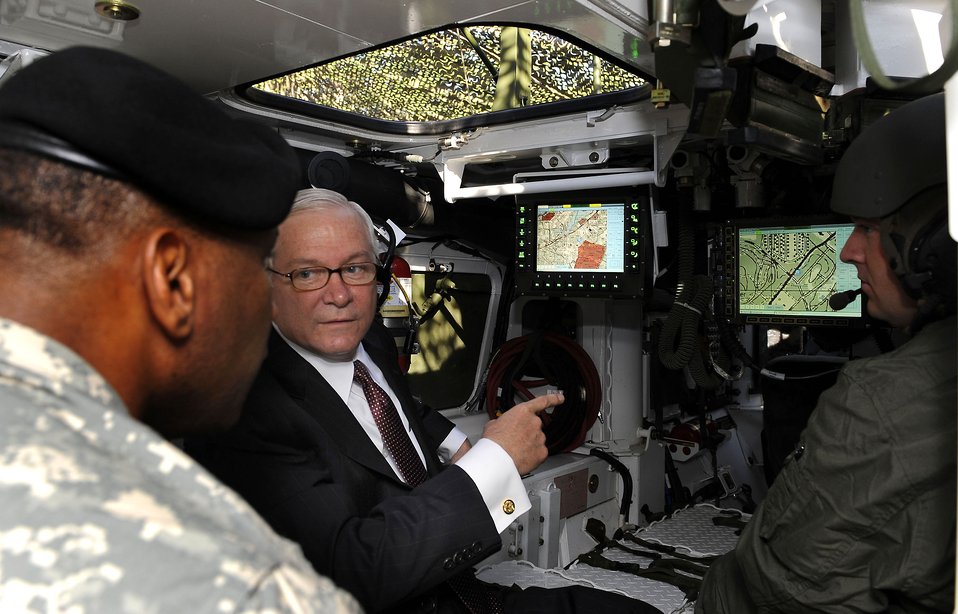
Secretary of Defense Robert M. Gates and Army Col. Harry Tunnell, 5th Brigade, 2nd Infantry Division, look into a Stryker transport vehicle during a tour of the 5th Brigade, 2nd Infantry Division at Fort Lewis, Wash., July 8.